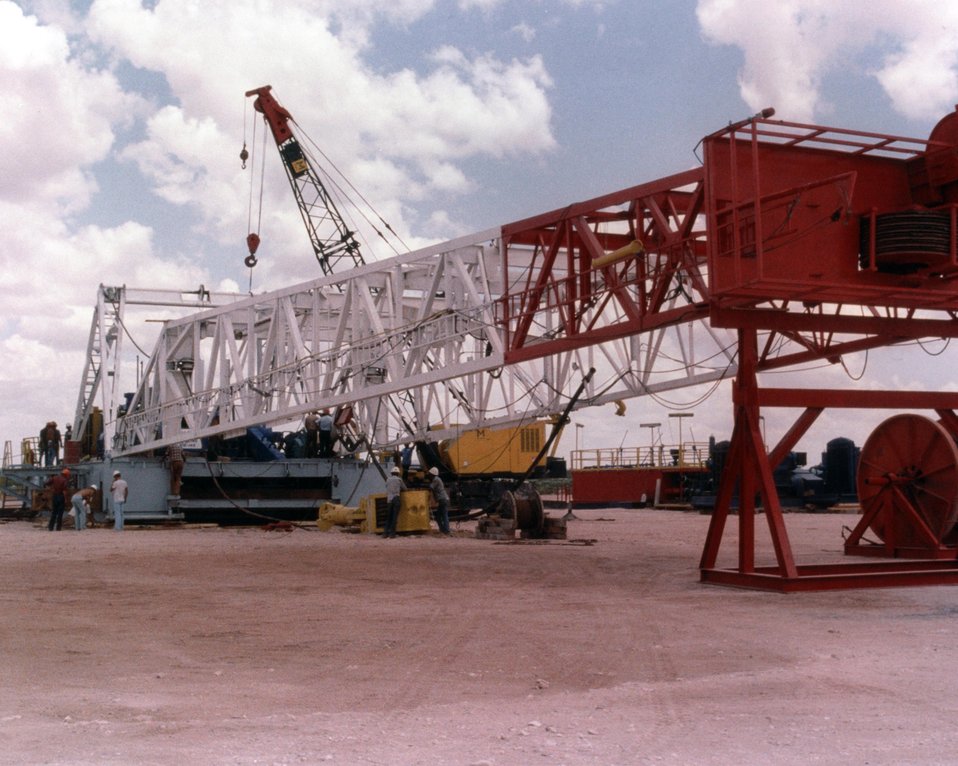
THE DERRICK OR HEAD FRAME STRUCTURE IS 112 FEET HIGH AND SUPPORTS THE WEIGHT OF THE DRILL RIG.

THE WASTE ISOLATION PILOT PLANT IS A DOE RESEARCH AND DEVELOPMENT FACILITY FOR DEMONSTRATING THE SAFE DISPOSAL OF TRANSURANIC RADIOACTIVE WASTES. TEST SHAFTS HAVE BEEN DRILLED TO A DEPTH OF 2,100 FEET. THE SHAFTS, ONE 6 FEET IN DIAMETER AND THE OTHER 12 FEET IN DIAMETER, PROVIDE AN ENTRY PASSAGE AND VENTILATION TO THE UNDERGROUND SALT ROCK FORMATION THAT IS BEING TESTED TO DETERMINE ITS SUITABILITY FOR RADIOACTIVE WASTE STORAGE.